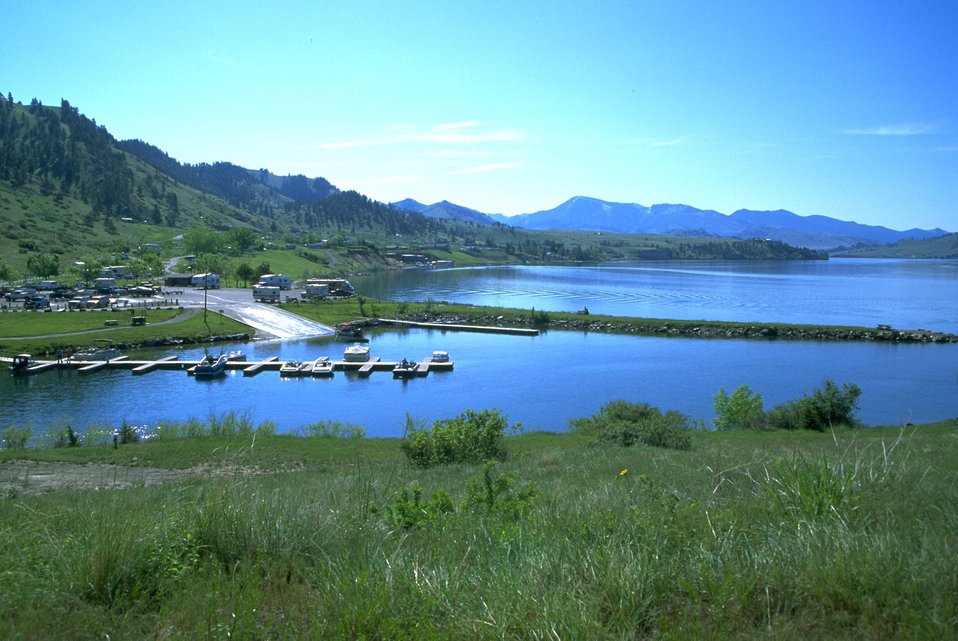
Campground and marina at Holter Lake